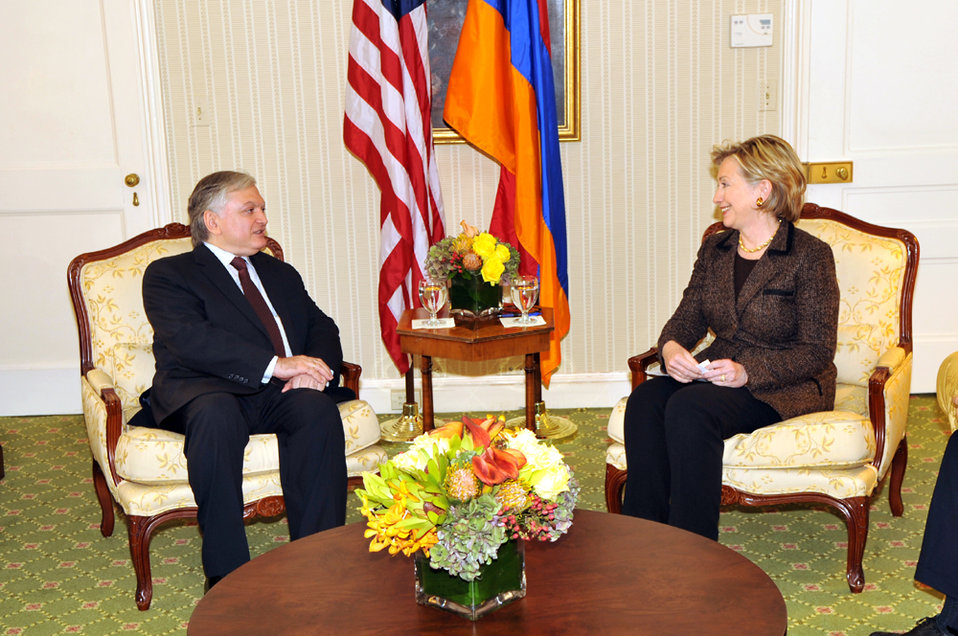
UNGA 2009: Secretary Clinton Meets With Armenian Foreign Minister

U.S. Secretary of State Hillary Rodham Clinton meets with Armenian Foreign Minister H.E. Edward Nalbandian at the Waldorf Astoria hotel in New York City, New York September 28, 2009.